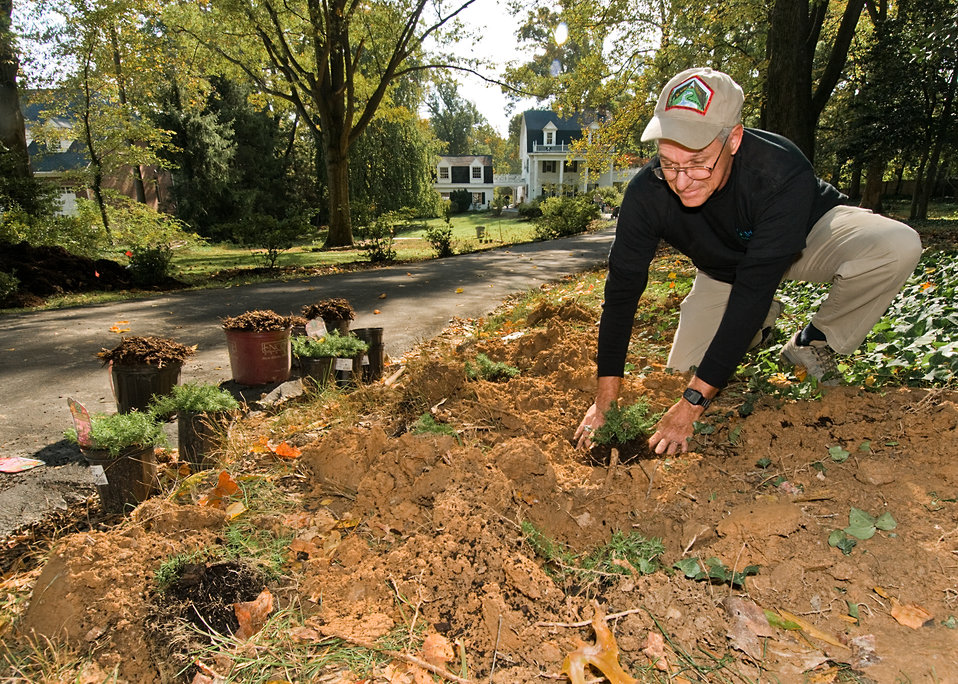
Jerry Bernard, National Geologist, Natural Resources Conservation Service plants phlox an important element of the landscape when Dr. Hugh Hammond Bennett the first Chief of the Natural Resources Conservation Service lived at “Eight Oaks” his home in McLean, Virginia. Bernard and employees of the Natural Resources Conservation Service performed the landscaping on Friday, October 15, 2010 as part of the celebration for the 75th Anniversary of the Natural Resources Conservation Service. USDA Photo 10di1523-30 by Bob Nichols.